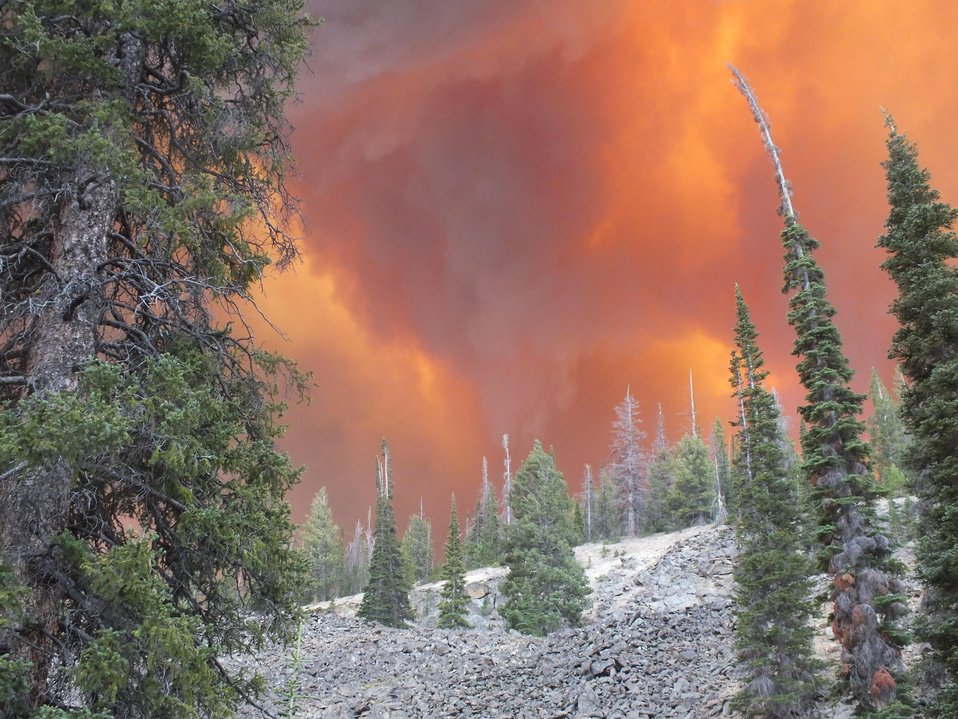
The Lodgepole Fire in the Salmon-Challis National Forest near Challis, ID began on Jul. 20, 2013 by lightning has consumed approximately 20,325 acres and is approximately 40% contained.